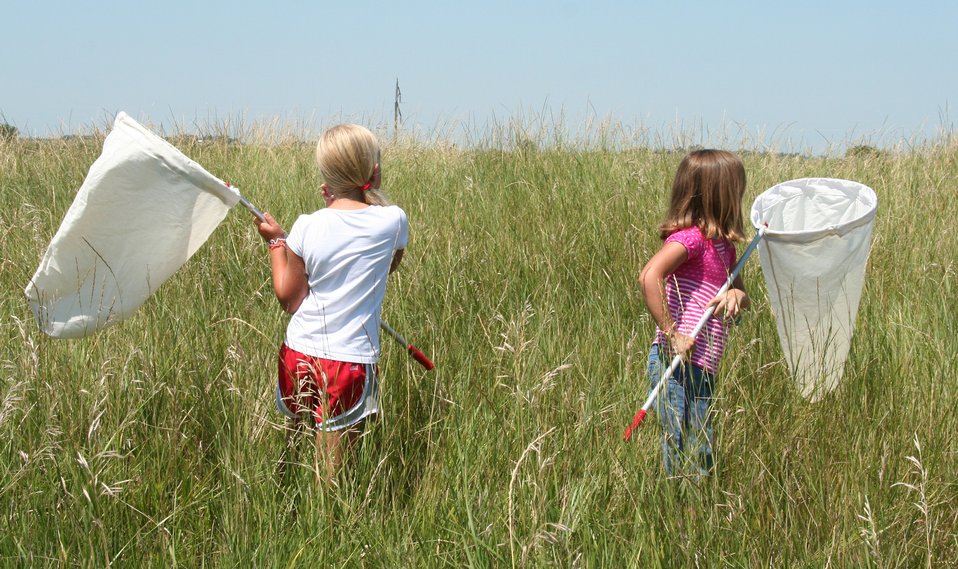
Huron Wetland Managment District

Children with sweep nets try to capture insects during a bug safari at Huron WMD.